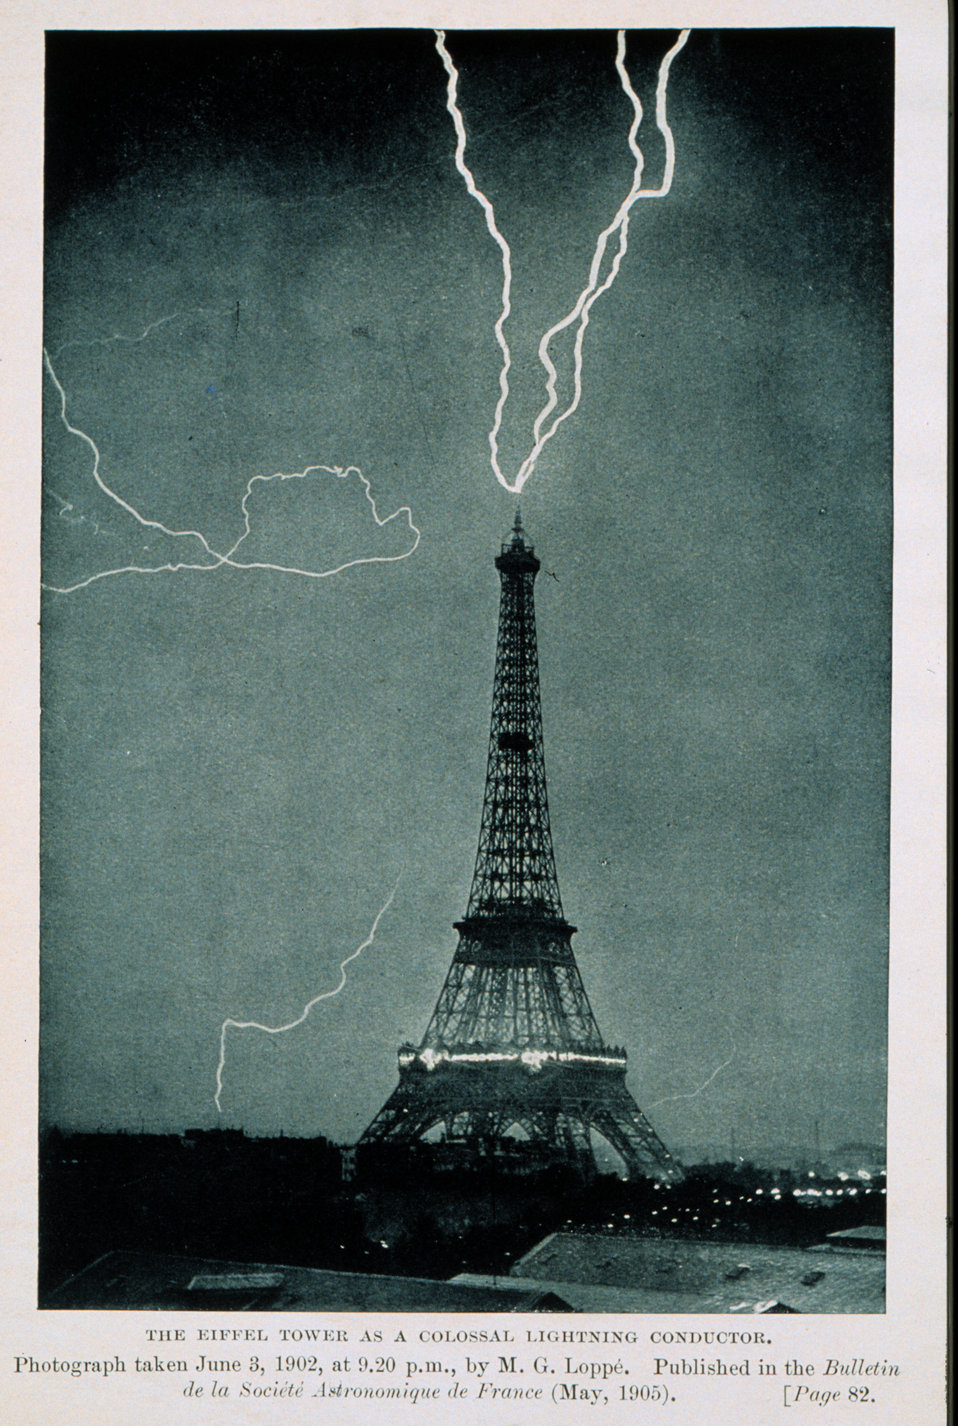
Lightning striking the Eiffel Tower, June 3, 1902, at 9:20 P.M. This is one of the earliest photographs of lightning in an urban setting In:'Thunder and Lightning', Camille Flammarion, translated by Walter Mostyn Published in 1906